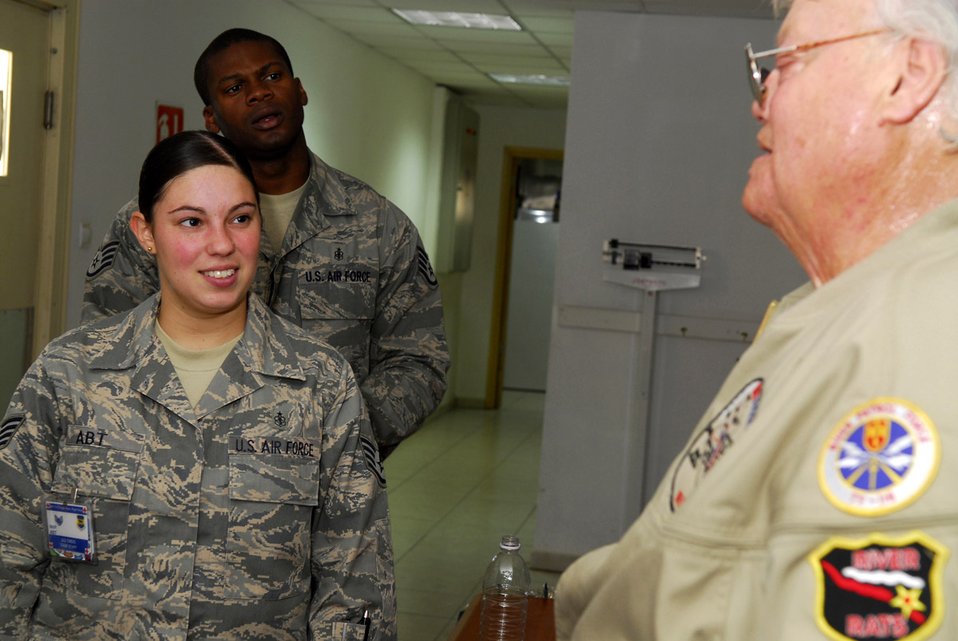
Veteran hope

Staff Sgt. Christina Abt and Staff Sgt. Terrell Kelley of 332nd Contingency Aeromedical Staging Facility met with Dave Roever Nov. 26 at Balad Air Base, Iraq. A severely disabled Vietnam War veteran, Mr. Roever visited Soldiers and Airmen around the base sharing a message of hope. Sergeant Abt is deployed from Langley Air Force Base, Va., and Sergeant Kelley is deployed from Charleston AFB, S.C.